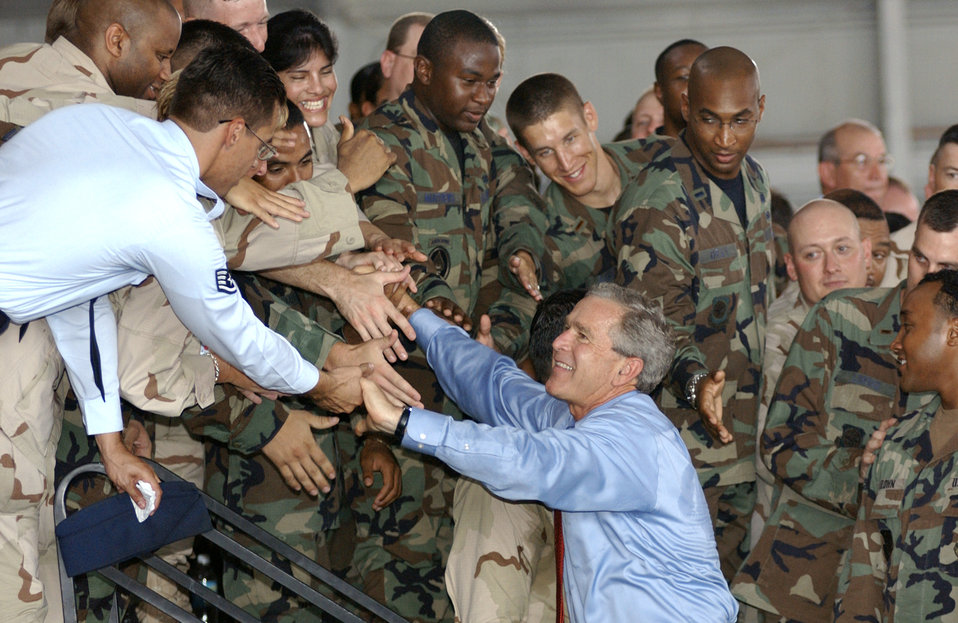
President Bush visits MacDill AFB

MACDILL AIR FORCE BASE, Fla. -- President George W. Bush shakes hands with servicemembers here June 16 following a speech that was broadcast live to servicemembers worldwide. The president said with the transfer of sovereignty two weeks away, the future of a free Iraq is coming into view.